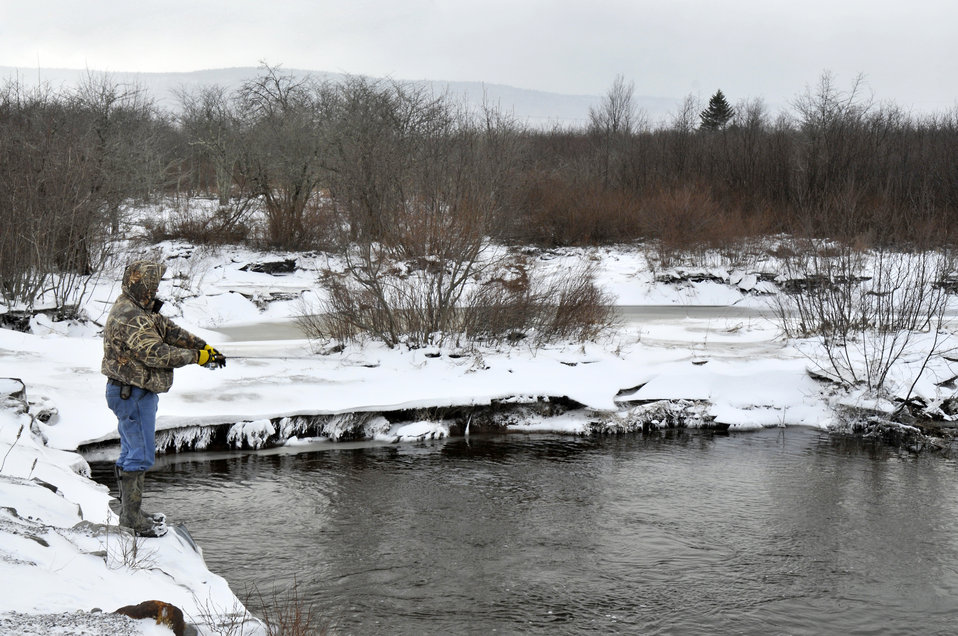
Visitors to the Monongahela National Forest in Davis, West Virginia enjoy fishing on January 28, 2010. National Forests offer visitors access to a diversity of outdoor winter recreational opportunities such as skiing, ski jumping, fishing, and Nordic walking. Visitors can view wildlife, scenic vistas, and explore historic places.